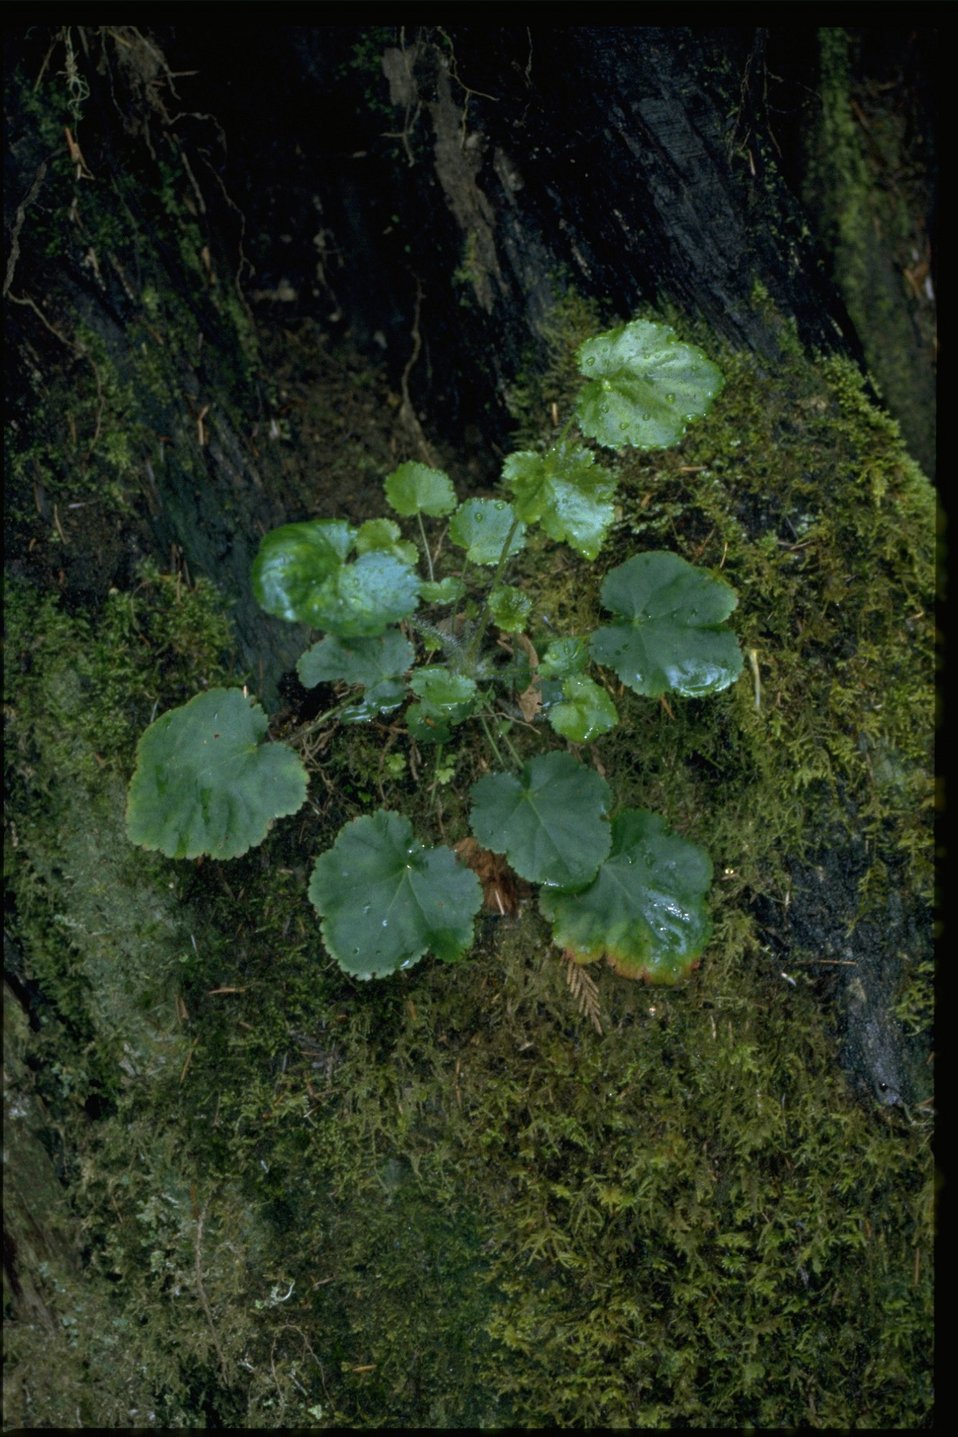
Medium shot of plant, genus Mitella.